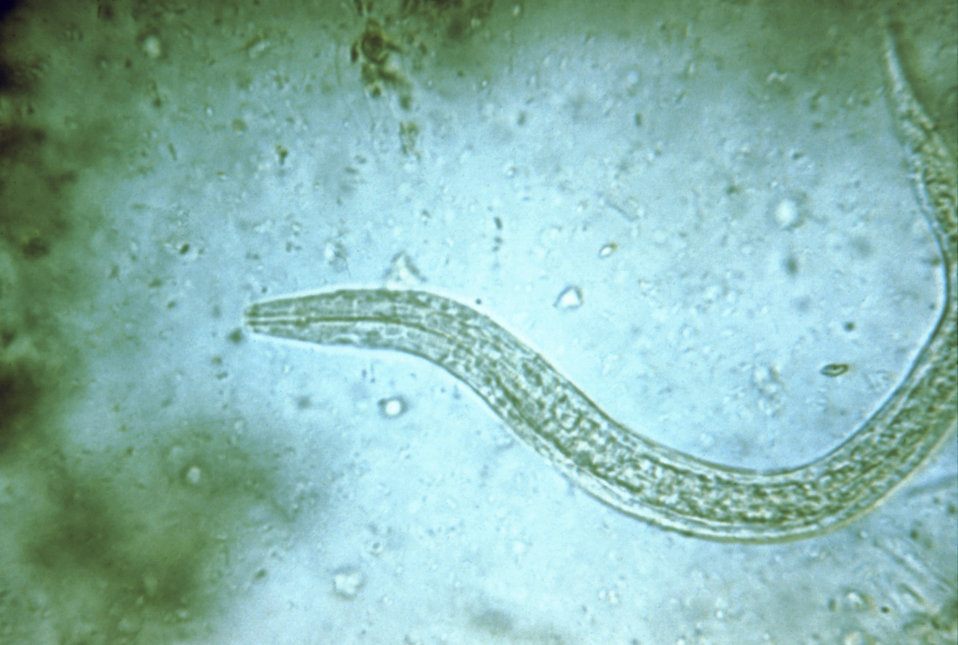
This micrograph depicts a hookworm rhabditiform larva, which represents its early, noninfectious immature stage.